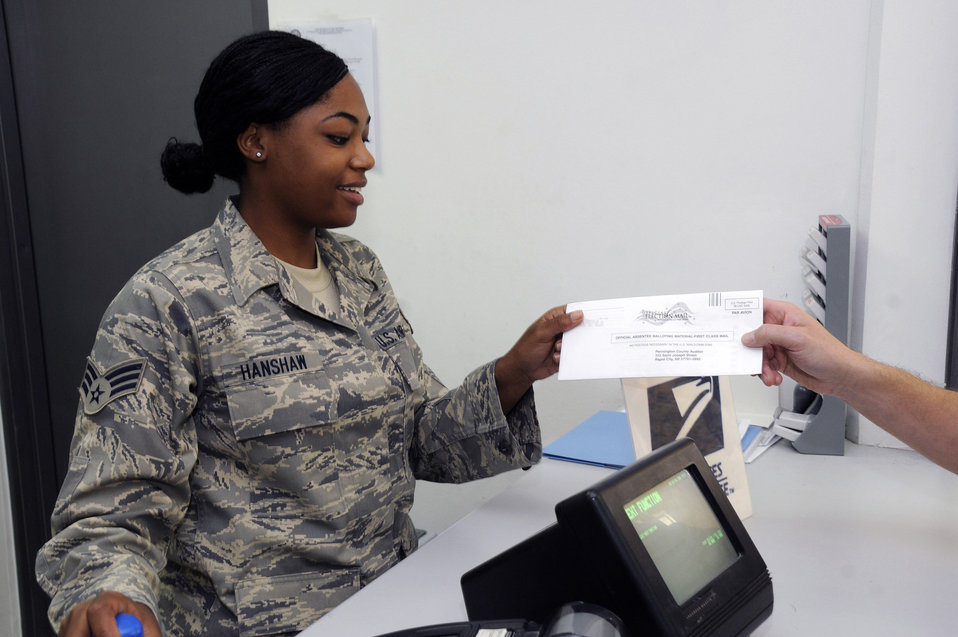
Get out the vote!

Senior Airman Ashley Hanshaw, a postal clerk with the 379th Expeditionary Communications Squadron at an air base in Southwest Asia, receives a completed absentee ballot that is ready to mail. Absentee ballots are given top priority for mail processing during election season in order to provide the best chance to have votes count. Airman Hanshaw, a native of the Bronx, N.Y., is deployed from Dobbins Air Force Base, Ga.